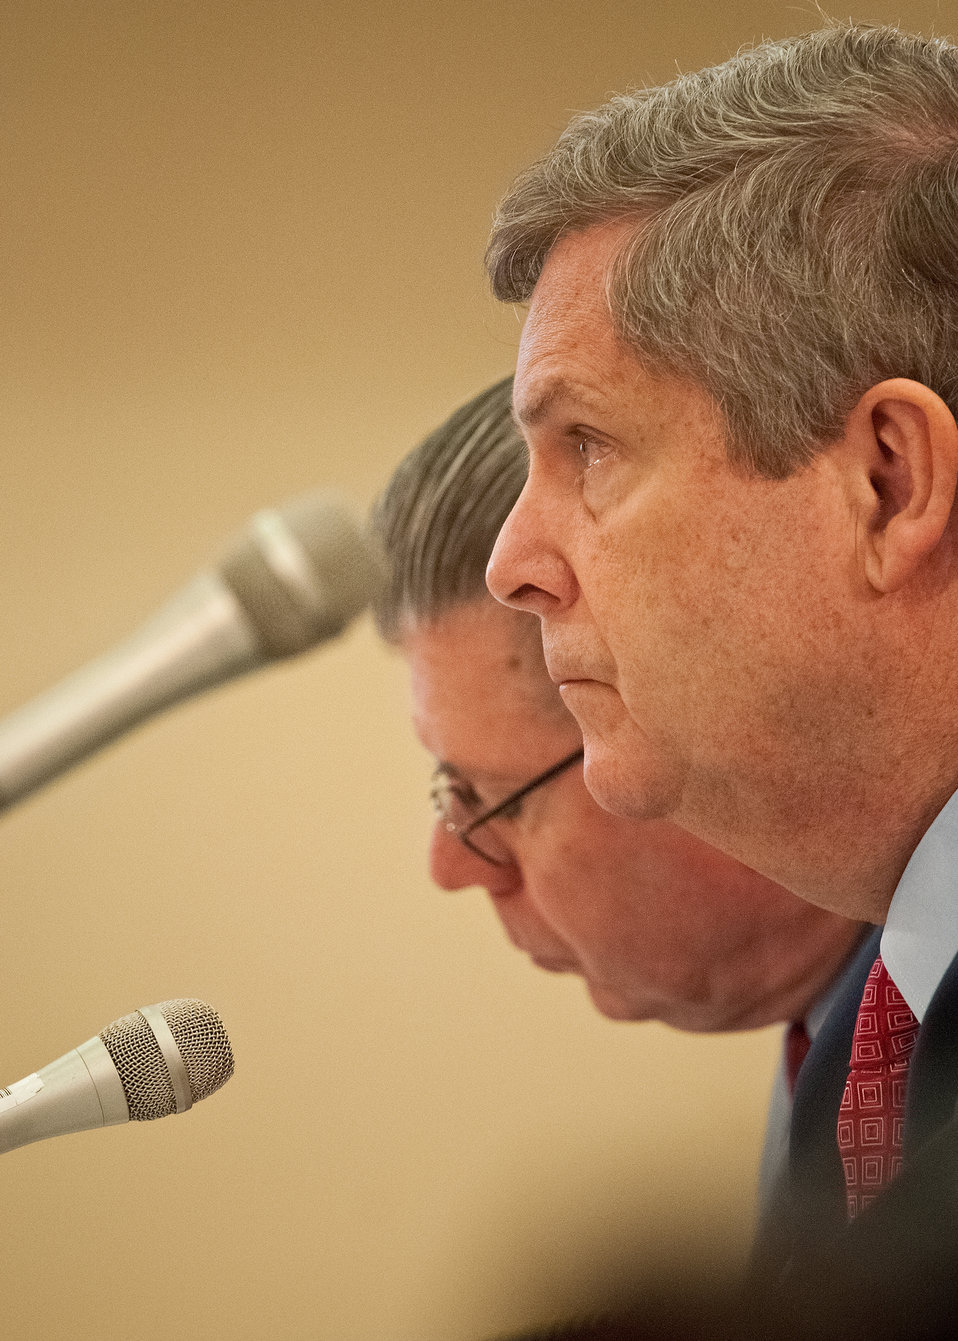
Dr. Joseph Glauber (left), Chief Economist and Agriculture Secretary Tom Vilsack (right) listen to questions posed by members of the House Agriculture Appropriations Committee to discuss the United States Department of Agriculture budget in the Rayburn House Office Building on Friday, February 17, 2012 in Washington, D.C.